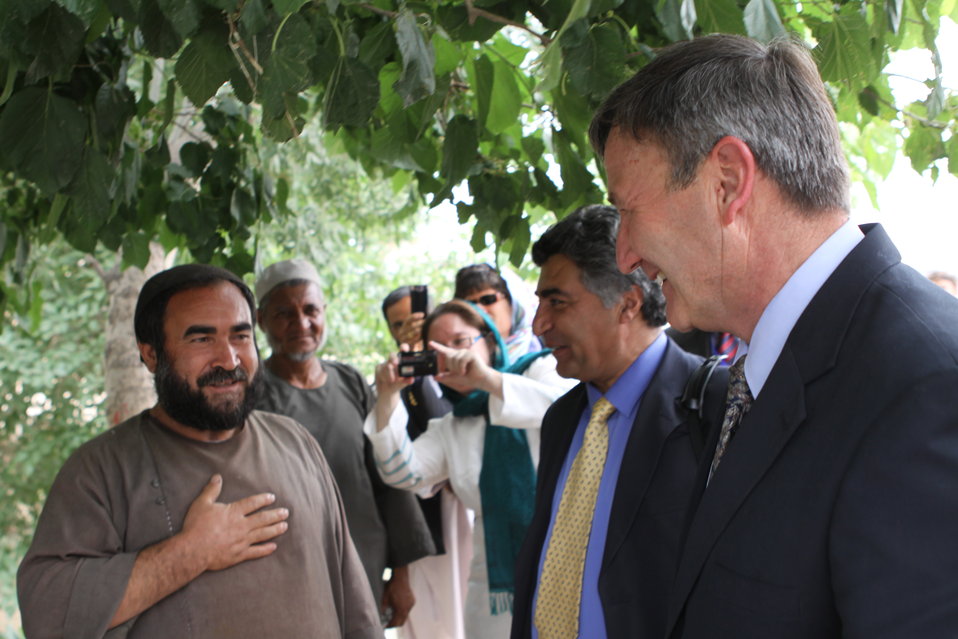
100525 Hirat Marble Conference 661